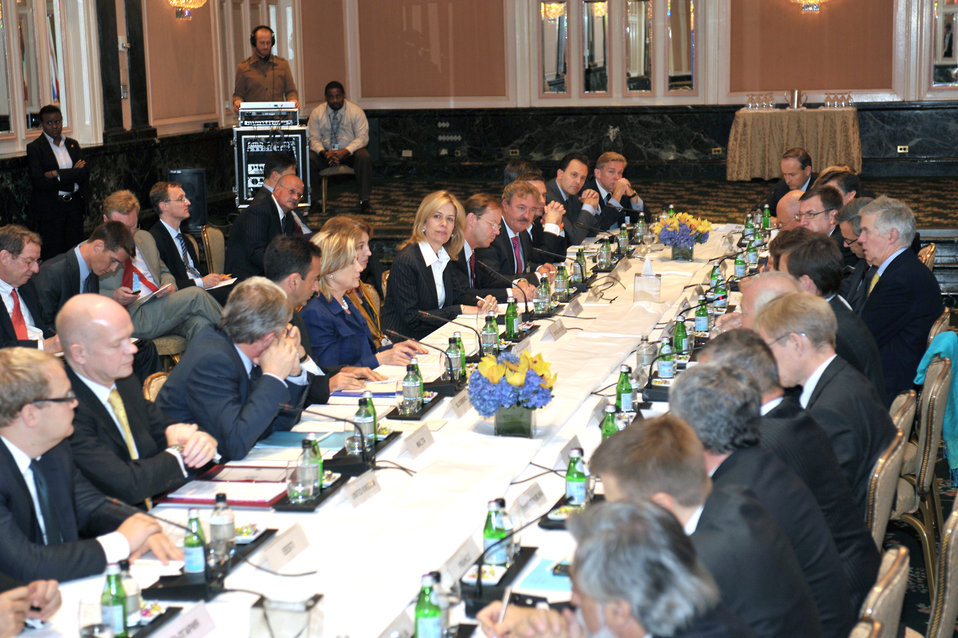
Secretary Clinton Hosts a Trans-Atlantic Dinner for Foreign Ministers From EU and NATO countries

U.S. Secretary of State Hillary Rodham Clinton hosts a Trans-Atlantic Dinner for Foreign Ministers from EU and NATO countries at the Waldorf-Astoria in New York, New York, on September 21, 2010.